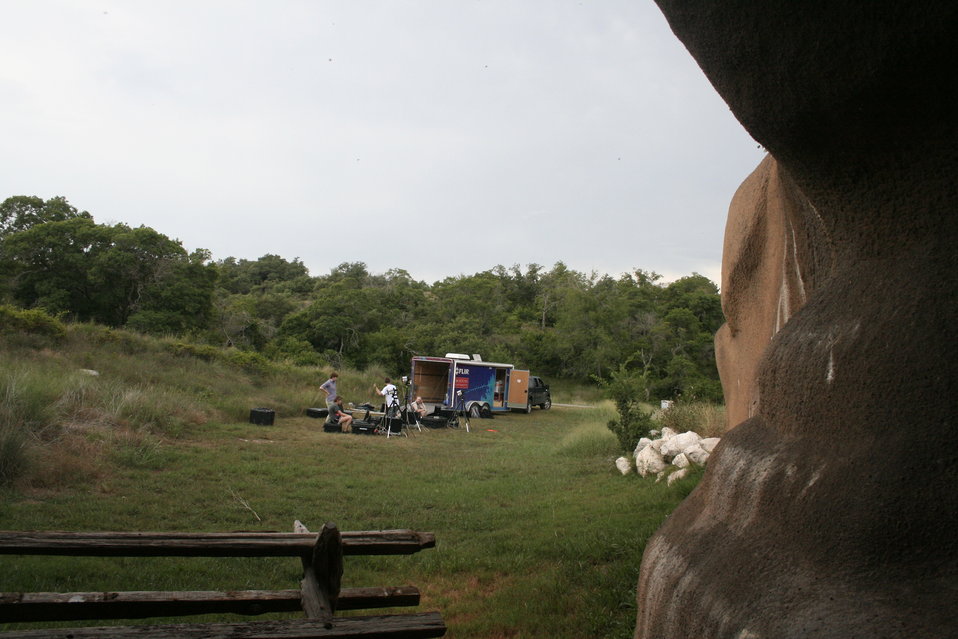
View from the Chiroptorium